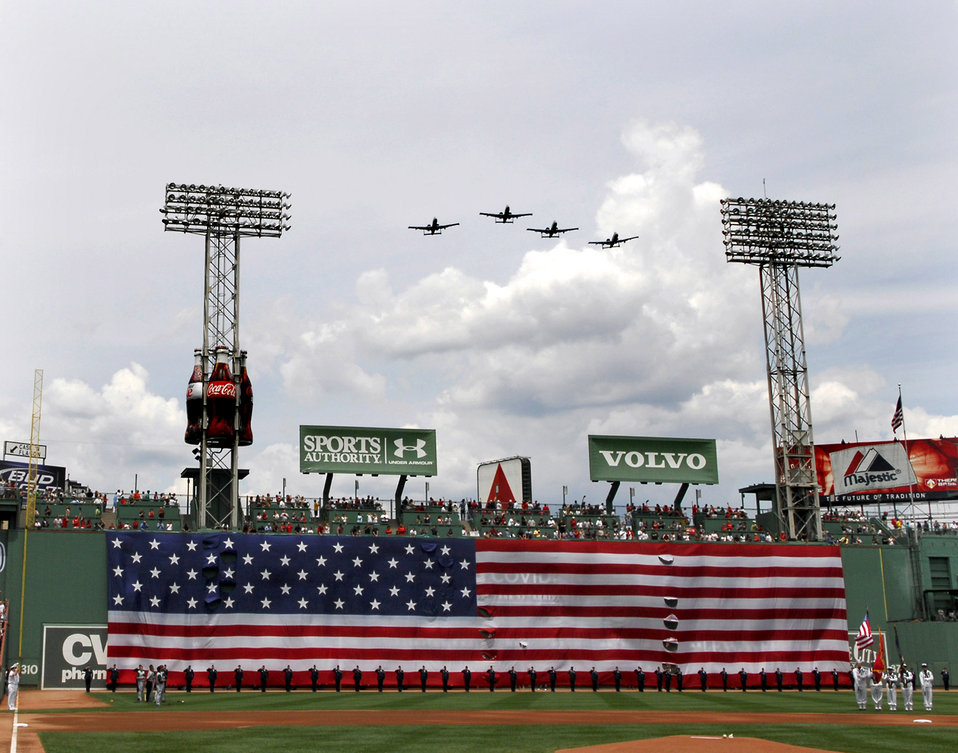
Honoring our independence

A-10 Thunderbolt IIs from Barnes Air National Guard Base in Westfield, Mass., fly over the Boston Red Sox-Tampa Bay Devil Rays game at Fenway Park July 4 . Servicemembers lined the park during the patriotic opening.